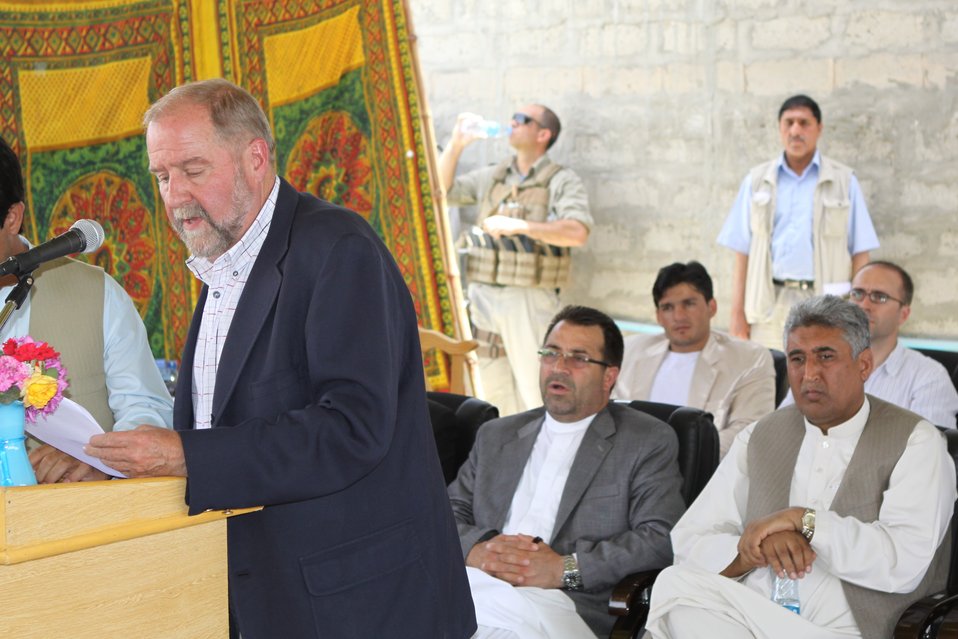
Bolan Poultry Farm